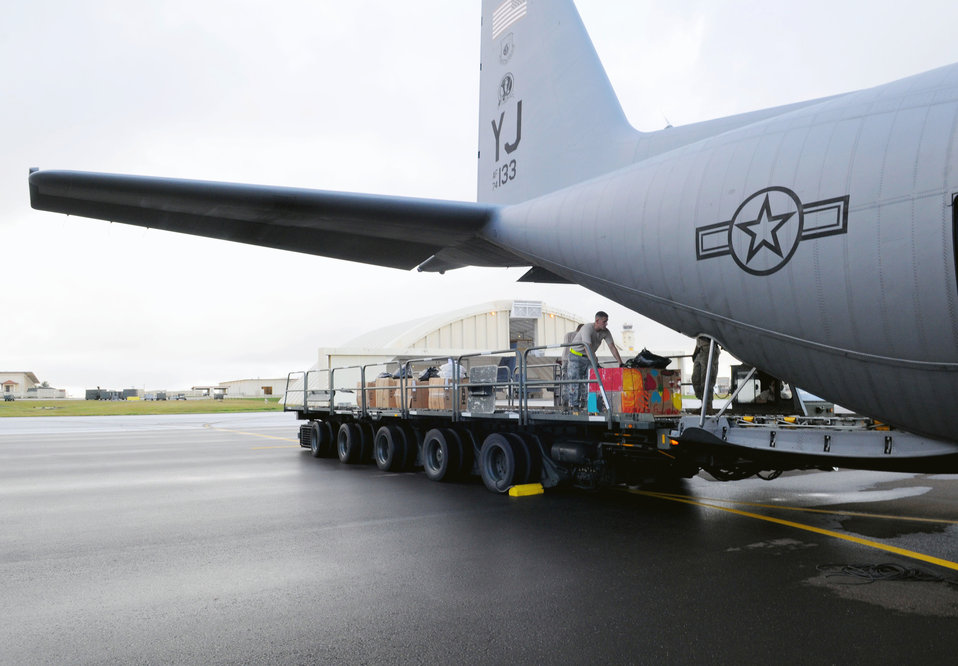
Operation Christmas Drop a team effort

Airmen from the 36th Airlift Squadron, Yokota Air Base, Japan, load boxes of donated goods worth more than $93,000 onto a C-130 Hercules prior to take-off from Andersen Air Force Base, Guam, during Operation Christmas Drop Dec. 14, 2010. This year more than 60 boxes will be dropped to 55 Island weighing in at more than 20,000 pounds. Operation Christmas Drop is the Air Force's longest-running humanitarian campaign which began in 1952. Airmen today continue the tradition delivering supplies to remote islands of the Commonwealth of the Northern Marianas Islands, Yap, Palau, Chuuk and Pohnpei.